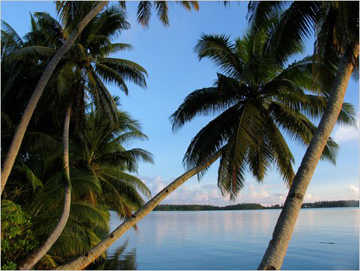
Palmyra Lagoon - Palmyra Atoll NWR

Palmyra Atoll NWR consists of a circular string of about 50 islets nestled among several lagoons and encircled by 15,000 acres of shallow turquoise reefs and deep blue submerged reefs.